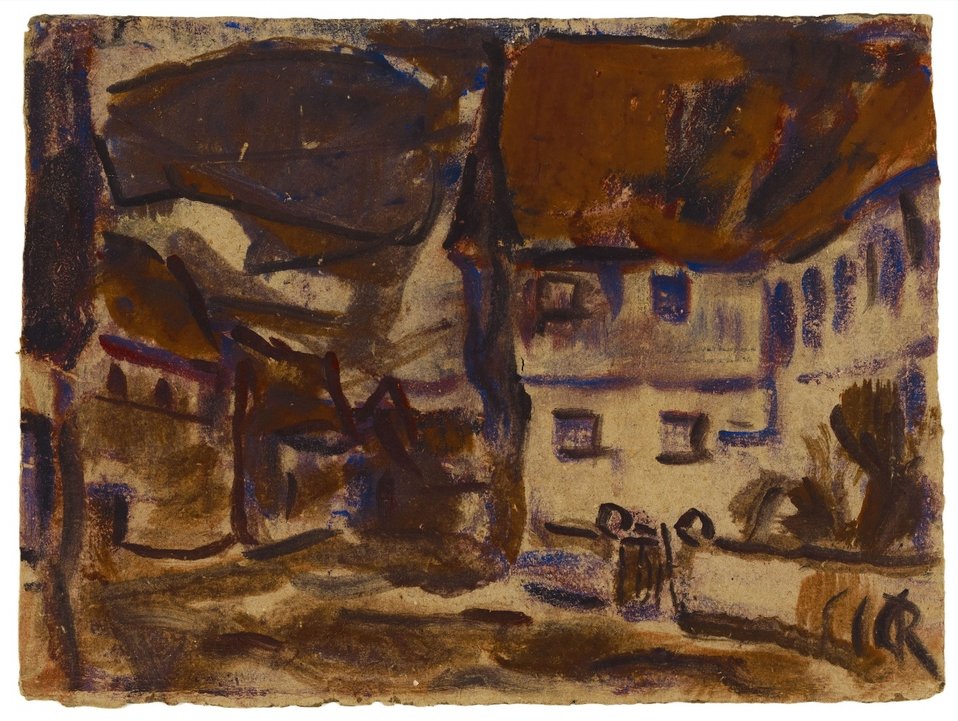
Straße in Soest. Tempera auf Karton ca. 31,5 x 42 cm, Unten rechts monogrammiert 'CR'